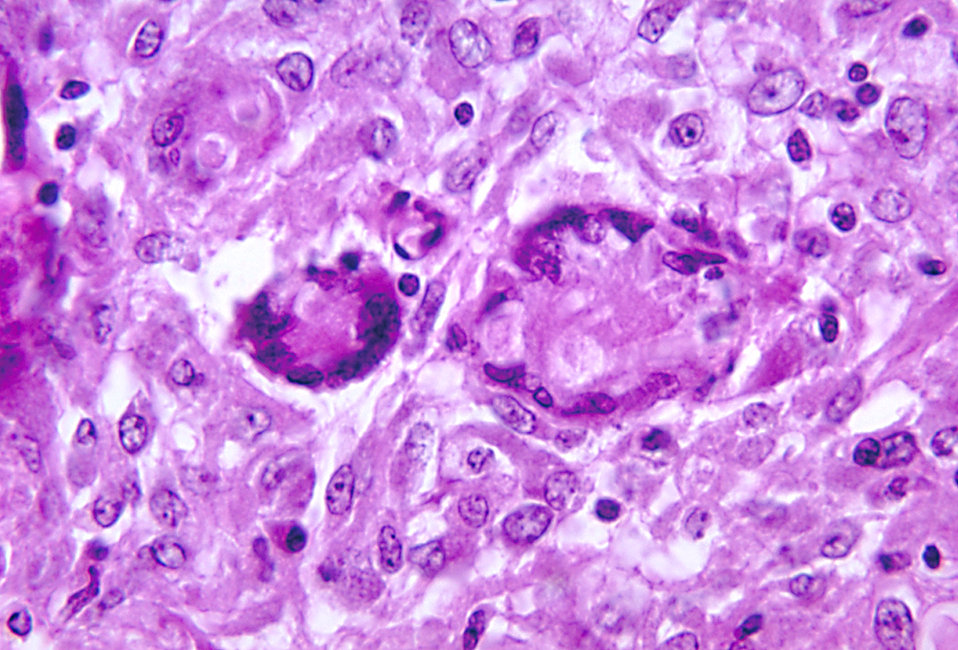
This micrograph depicts the histopathologic changes seen in phaeohyphomycosis due to Bipolaris hawaiiensis.